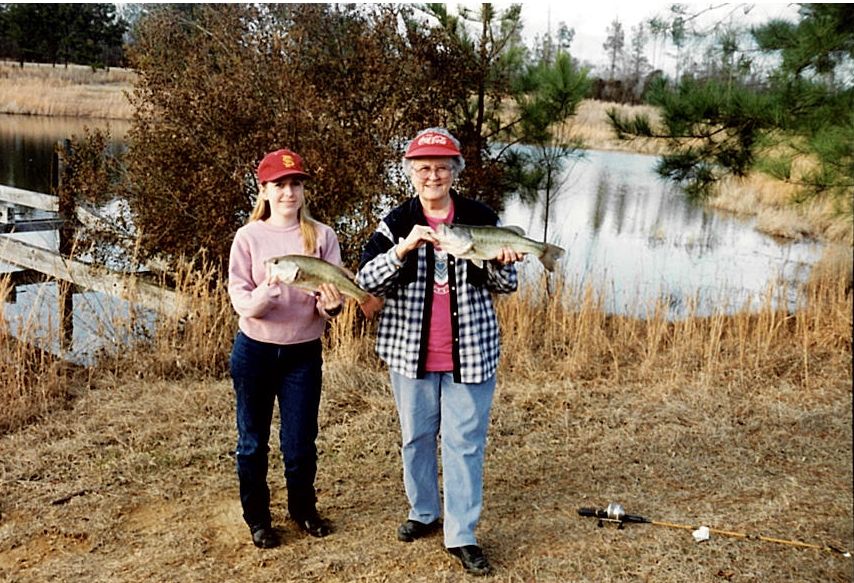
Mindy Gautreaux and Gran

A high school age Mindy fishes with her Gran, Jane Wilson.